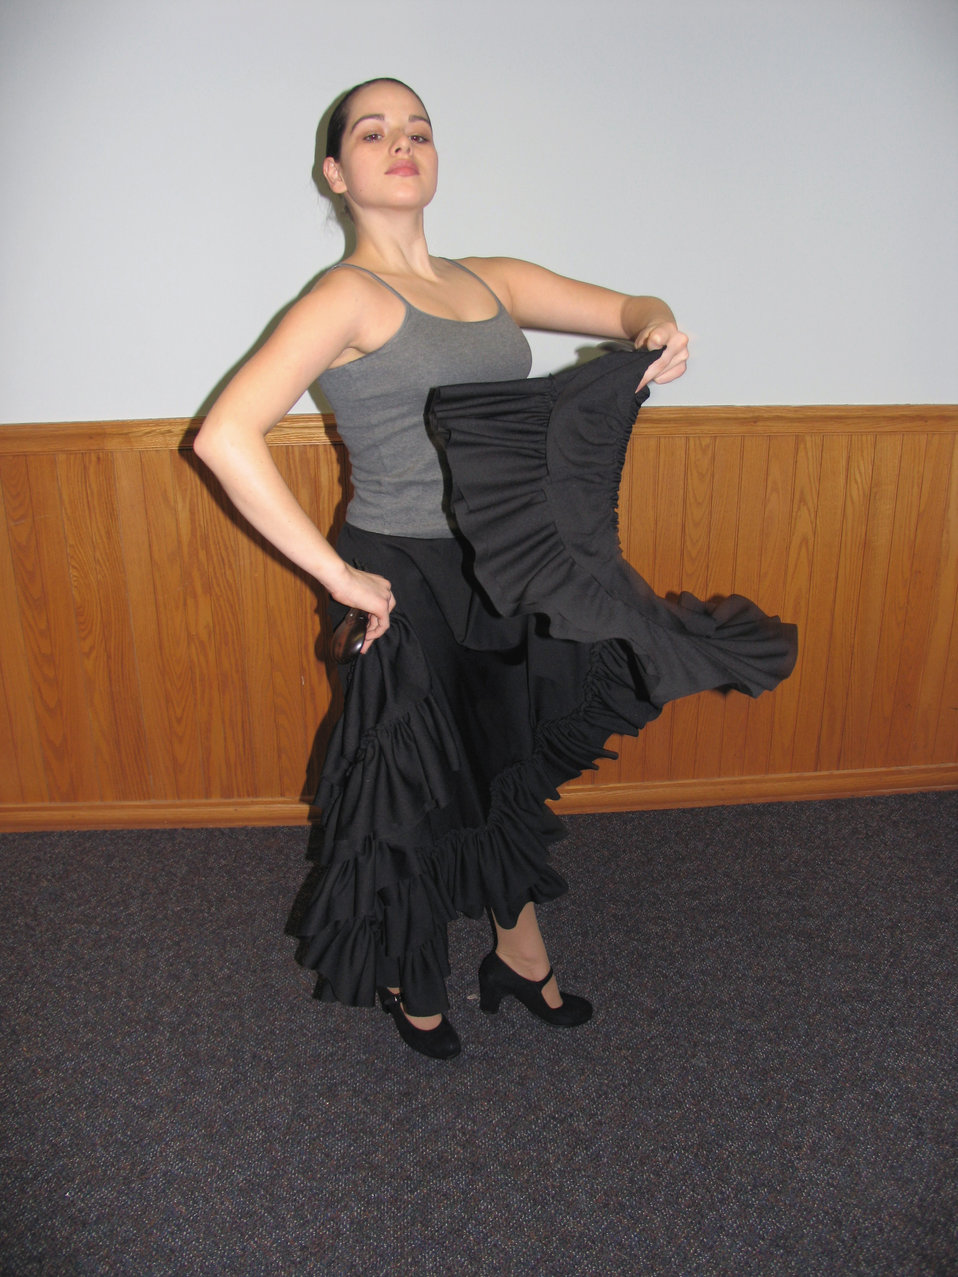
Practice makes perfect for flamenco-dancing Airman

CAMBRIDGE, Mass. -- Airman 1st Class Jackqueline Raastad practices poise and foot rhythms during her flamenco class here. She began flamenco dancing four years ago after seeing a live performance while in Hawaii.